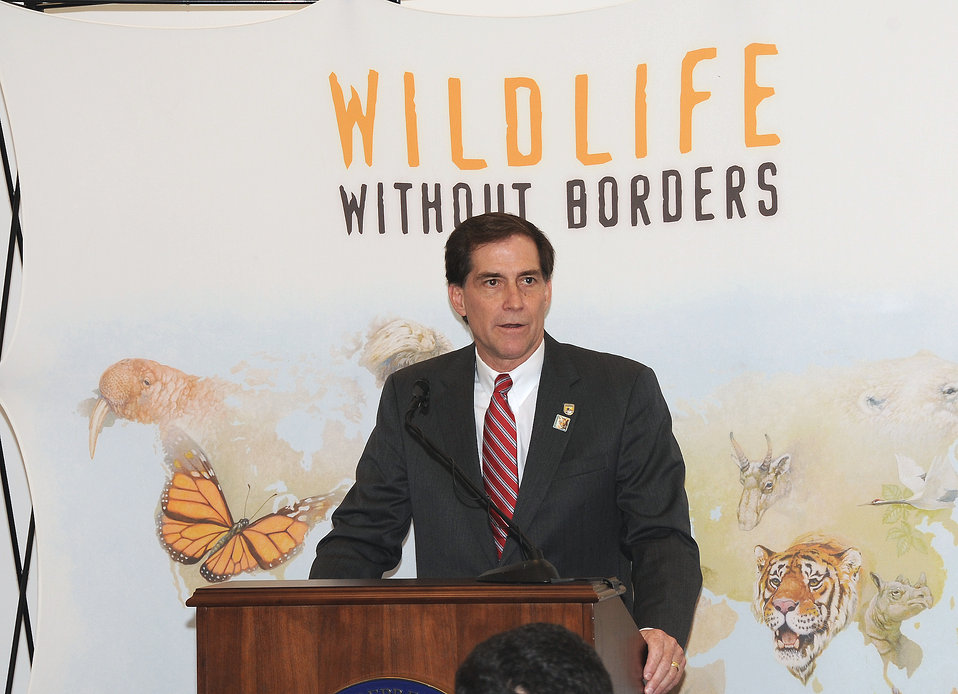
Save Vanishing Species on Capitol Hill

Dan Ashe, Director of the U.S. Fish and Wildlife Service